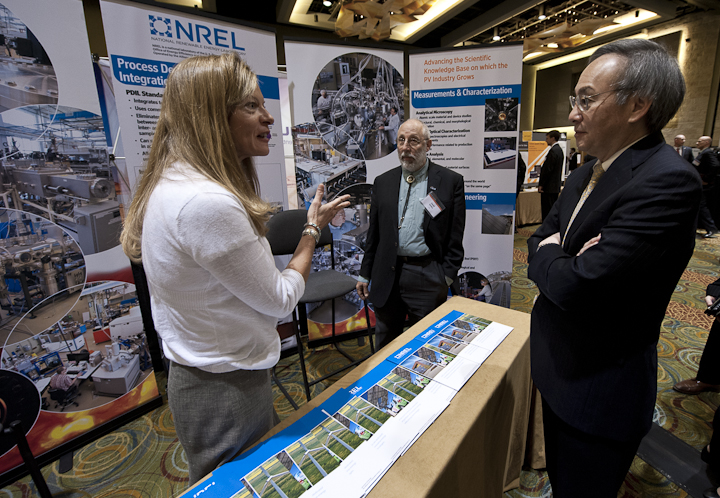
SunShot NREL

June 13, 2012- Steven Chu, Secretary of Energy, U.S. Department of Energy talks with Martha Symco-Davies and David Ginley from NREL at the Technology Forum at the SunShot Grand Challenge Summit and Technology Forum in Denver, Colorado.